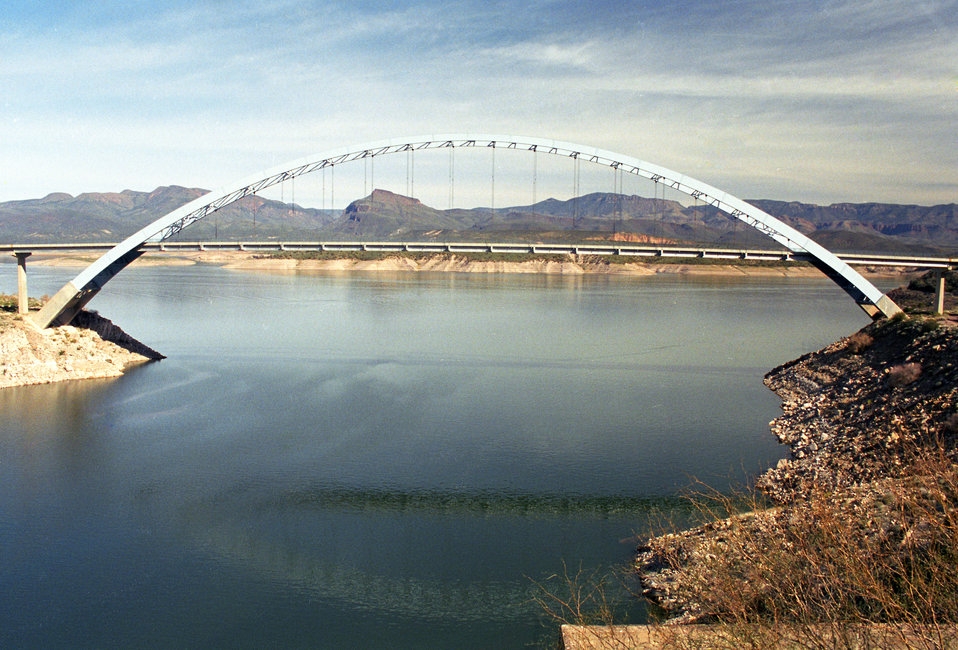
Roosevelt Lake Bridge over Theodore Roosevelt Lake in Tonto National Forest near Tucson, AZ on January 24, 2012. The Roosevelt Lake Bridge carries state route 188 over Roosevelt Lake in Gila County was completed in September 1990.